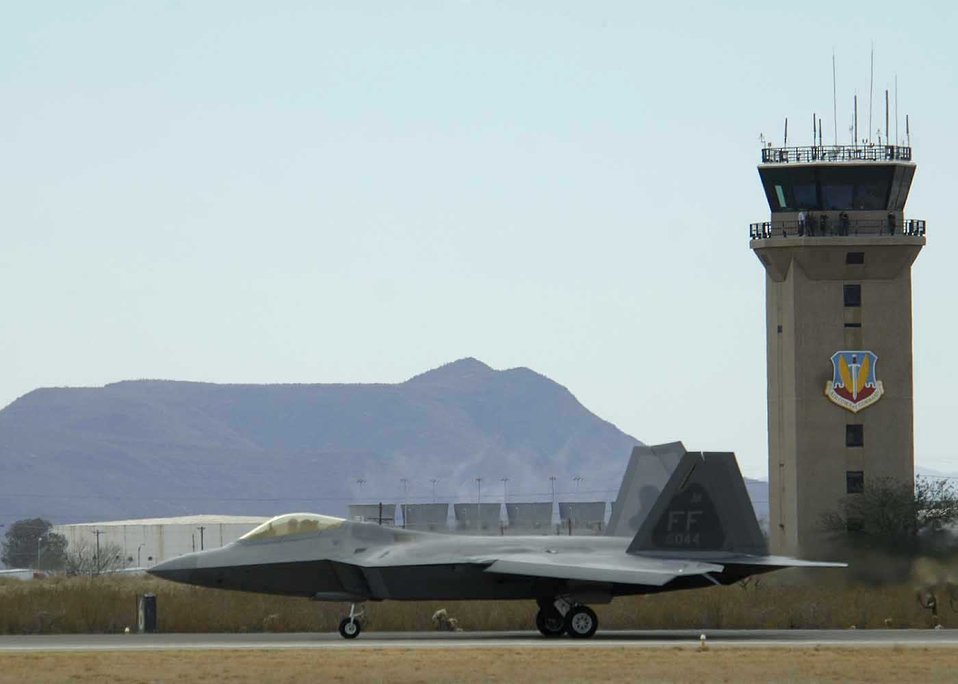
Heritage flight

Lieutenant Col. Michael Shower, an F-22A Raptor pilot, taxis by the air traffic control tower, after landing Friday, March 3, 2006, at Davis-Monthan Air Force Base, Ariz, during the 2006 Heritage Conference. The conference involves today's state-of-the-art fighters flying in close formation with World War II and Korean War vintage fighters. The flight is designed to safely display the evolution of U.S. Air Force airpower and support Air Force's recruiting and retention efforts.